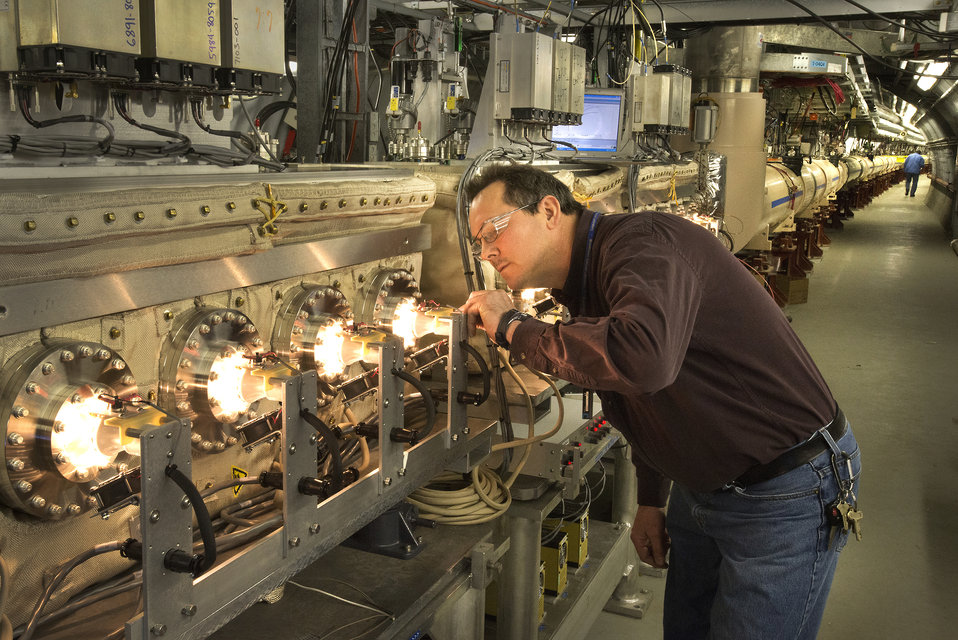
BNL TECHNICIAN MIKE MYERS CHECKS COMPONENTS OF STOCHASTIC COOLING 'KICKERS,' WHICH GENERATE ELECTRIC FIELDS TO NUDGE IONS IN THE RELATIVISTIC HEAVY ION COLLIDER'S (RHIC) GOLD BEAMS BACK INTO TIGHTLY PACKED BUNCHES.

This system of squeezing and cooling beams has produced dramatic increases in collision rates-and the data coming out of RHIC.